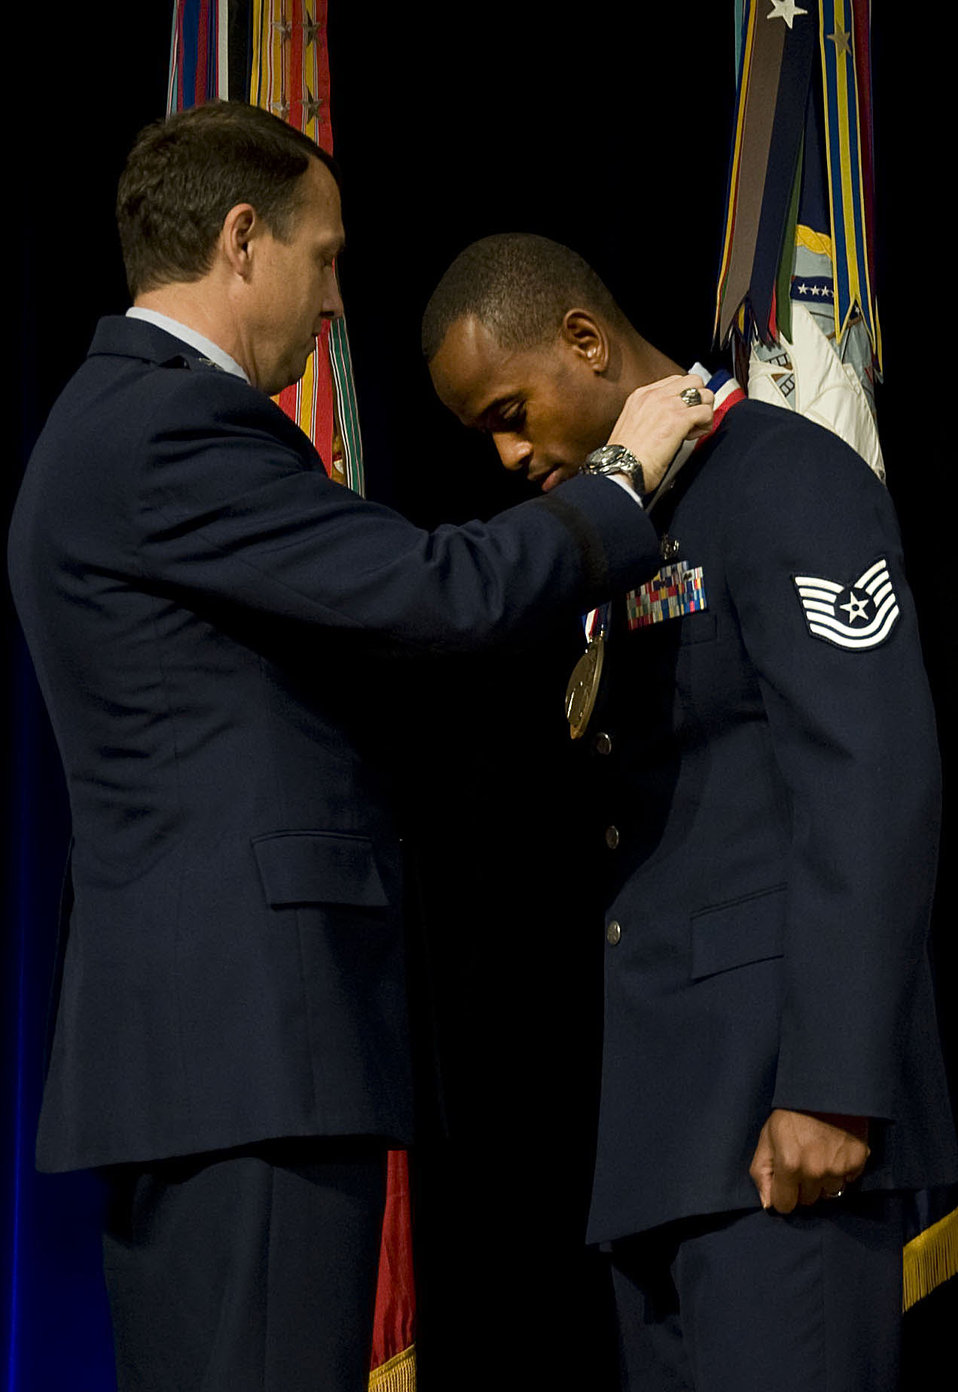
Airman exemplifies ‘Spirit of Hope’

Maj. Gen. Earl Matthews, the director of Cyberspace Operations, presents Tech. Sgt. Leray Smedley, from Beale Air Force Base, Calif., the Spirit of Hope Award at the Pentagon on Nov. 15, 2011. Smedley received the award for volunteering more than 300 hours, raising $66,000, and leading 3,000 military and civilian personnel toward serving the Beale AFB and local communities in 70 events.